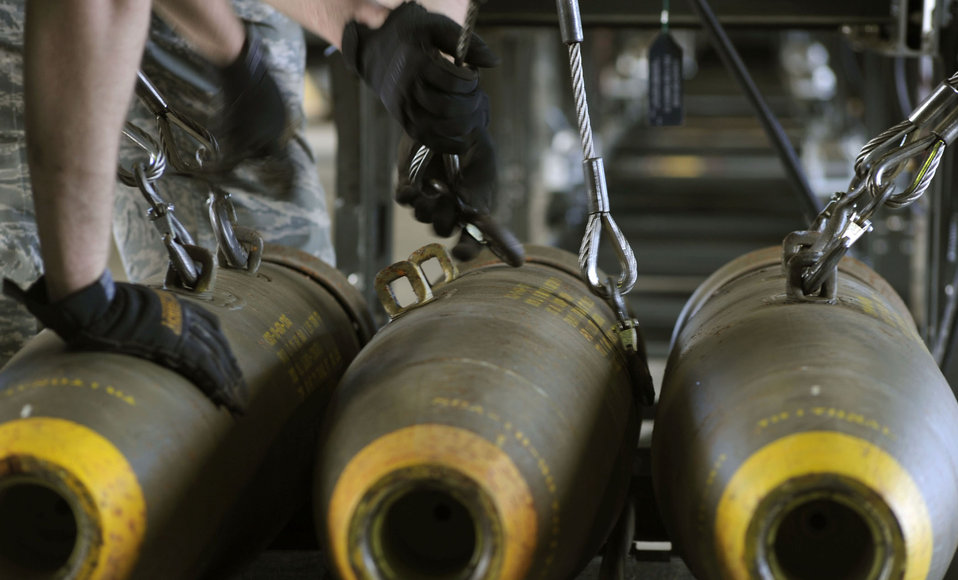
Osan Airmen host munitions exercise

Senior Airmen Travis Talley and Derek White attach hooks to BLU-109 munitions before loading them onto a rolling rack to be assembled during the Combat Ammunitions Production Exercise May 25, 2010, at Osan Air Base, South Korea. Airman Talley is a munitions maintainer from the 51st Munitions Squadron. Airman White is from the 35th Munitions Squadron at Misawa Air Base, Japan. CAPEX is a non-rated exercise held once a year in the Pacific Air Forces region. It provides training on non-nuclear reserve munitions production in integrated tasks orders and planning.